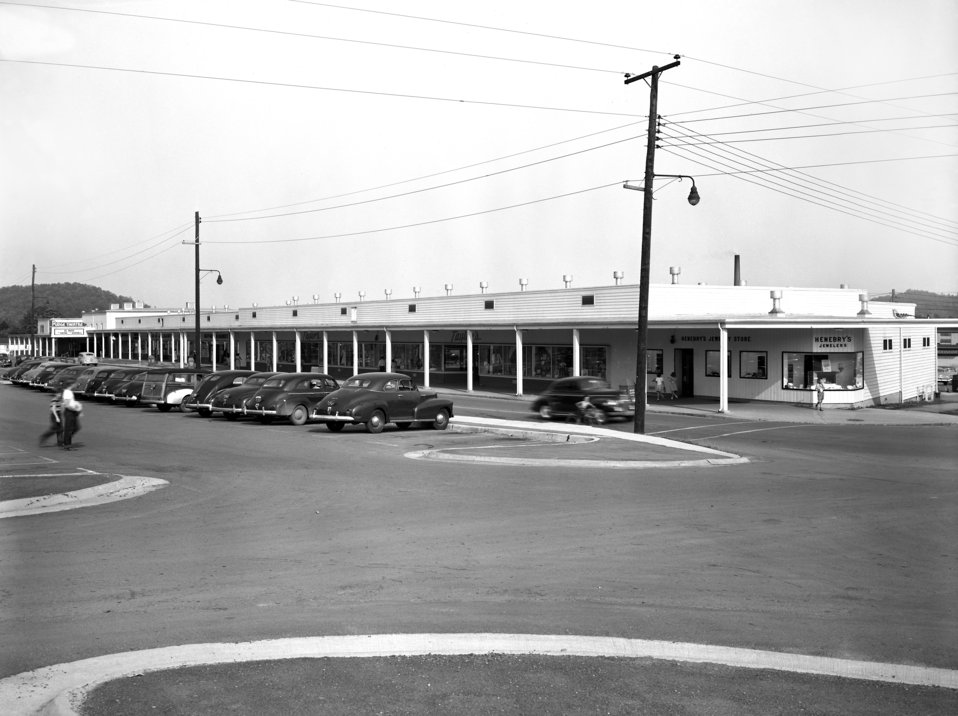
Jackson Square Broadway Ave. Stores 1949

5539 DOE photo Ed Westcott 5-19-1949 Oak Ridge Tennessee